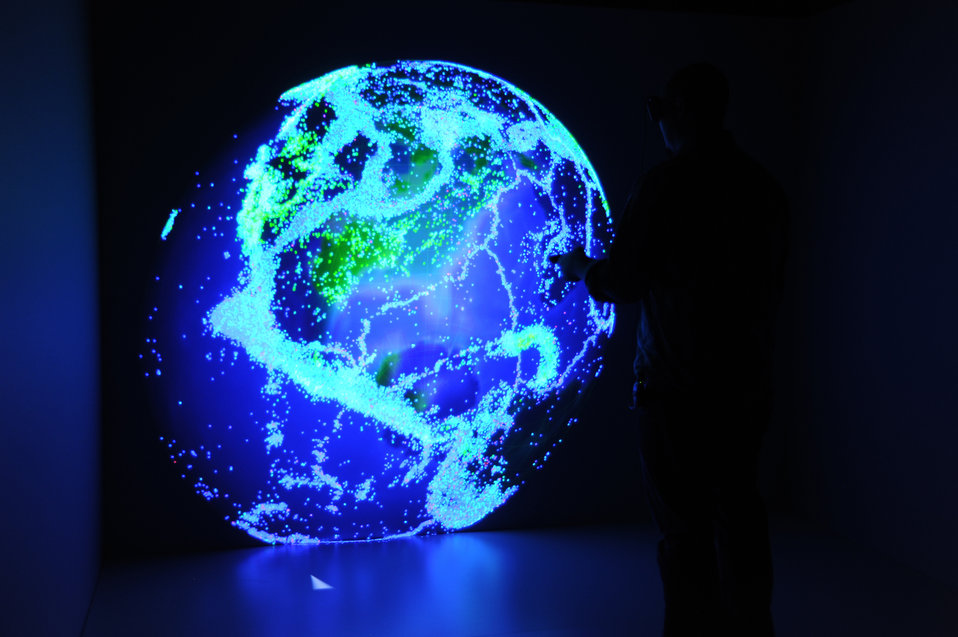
THE Computer-Assisted Virtual Environment (CAVE) at INL Center for Advanced Energy Studies can map geographic information such as this representation of earthquake location and magnitude over the past 100 years.